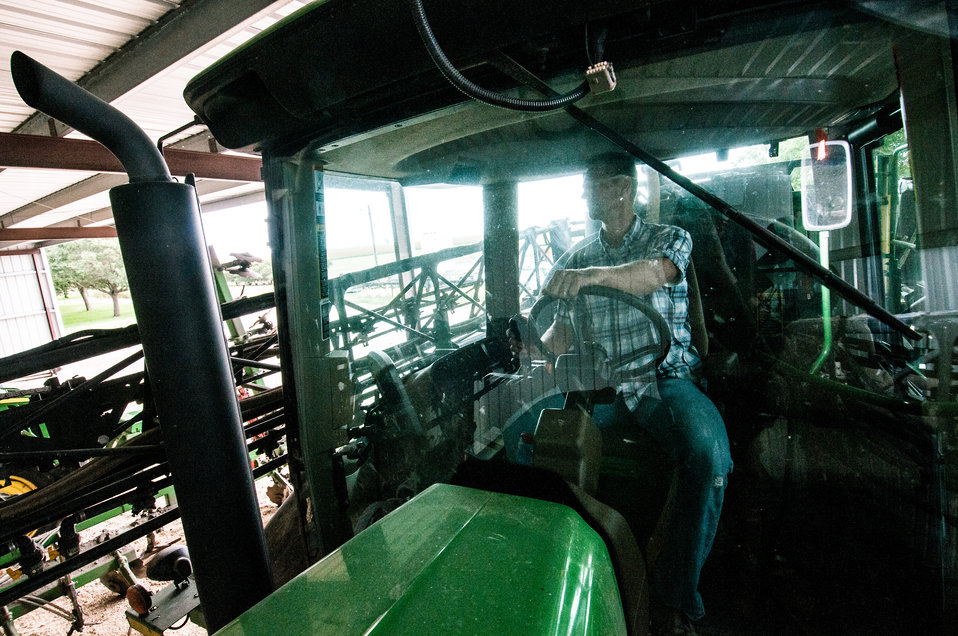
Michael Popp performs mechanical checks on farm equipment used for tilling, planting, spraying and harvesting cotton and milo (a.k.a. grain sorghum) grown at Popp Farms 05, a farming family that spans five generations and is now based in El Campo, Texas, on June 20, 2013. The farms’ 2,400 acres are about an hour drive southwest from Houston. Michael chose farming after graduating from Texas A&M with a degree in Agriculture Economics and a Masters degree in Finance. The farm is a member of the United Agricultural Cooperative, Inc.